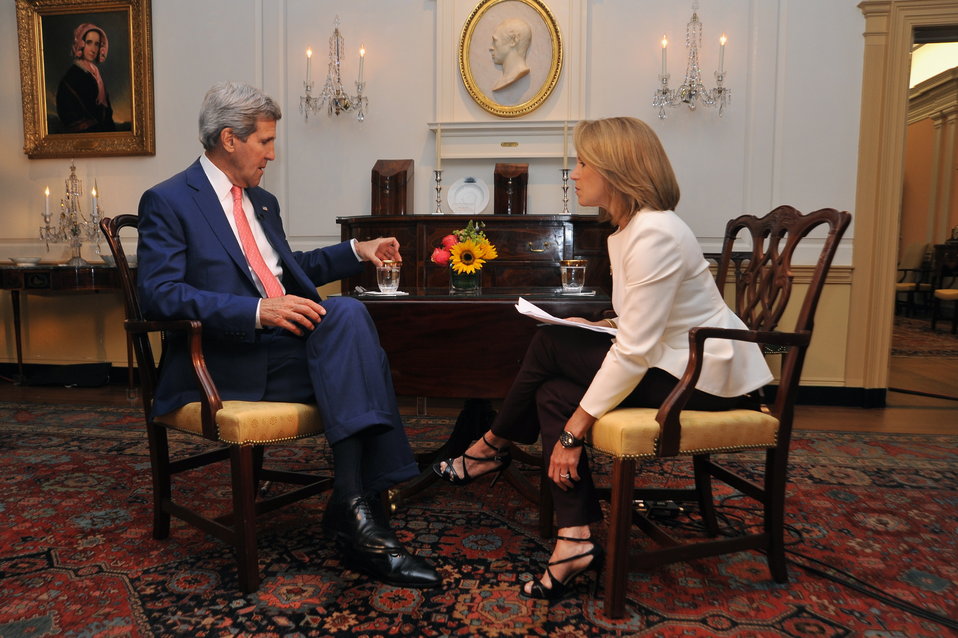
Yahoo! News Reporter Katie Couric Interviews Secretary Kerry

Yahoo! News Reporter Katie Couric Interviews U.S. Secretary of State John Kerry at the U.S. Department of State in Washington, D.C. on June 16, 2014.